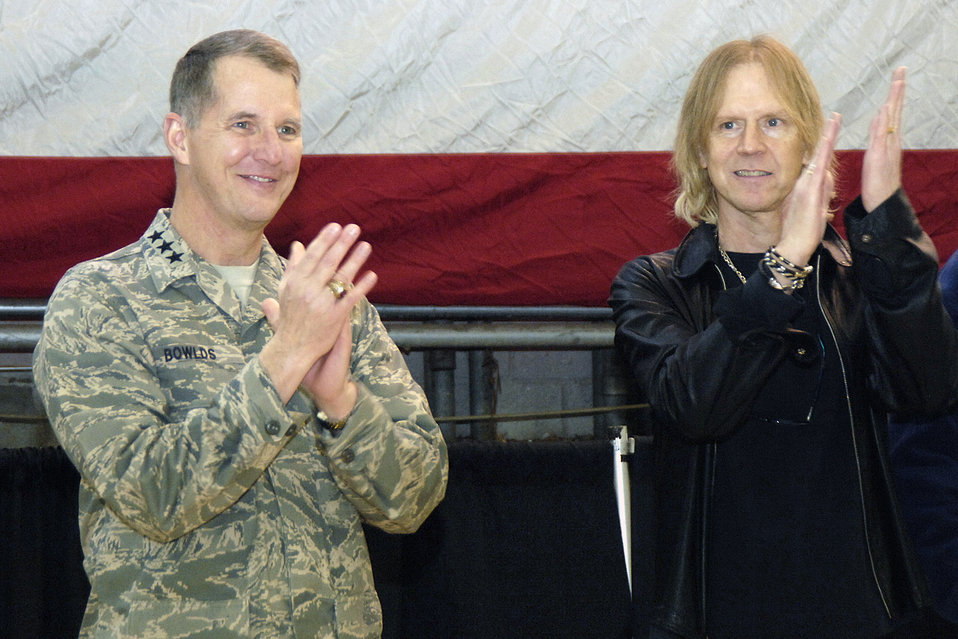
Hanscom heroes welcomed home

Lt. Gen. Ted Bowlds (left) and Tom Hamilton clap to the Air Force song at the conclusion of the Heroes' Homecoming celebration Dec. 12 at Hanscom Air Force Base, Mass. The event officially welcomed home more than 45 base Airmen who deployed over the past six months and paid tribute to their families. General Bowlds is the Electronic Systems Center commander. Mr. Hamilton is the bassist for the rock group Aerosmith.